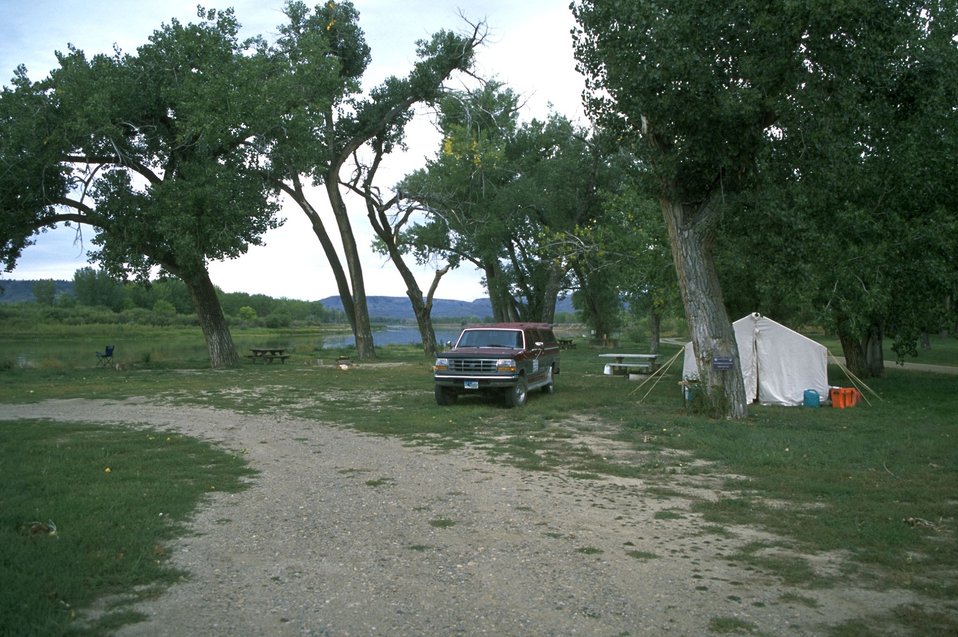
Camping area at Woodhawk Bottom, Upper Missouri River Breaks National Monument.